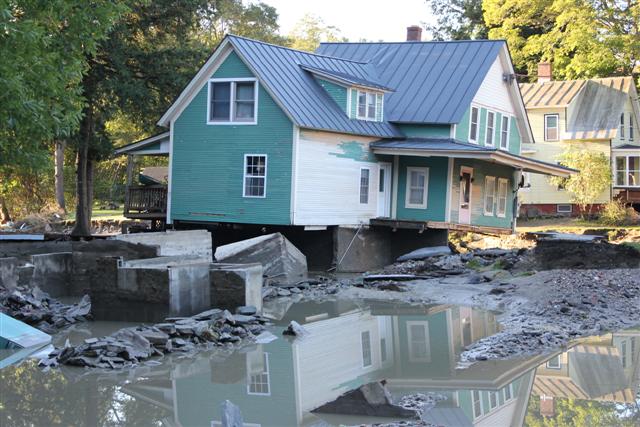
Damage after Hurricane Irene

Houses were severely damaged after Hurricane Irene came through Bethel, VT. on August 28, 2011.